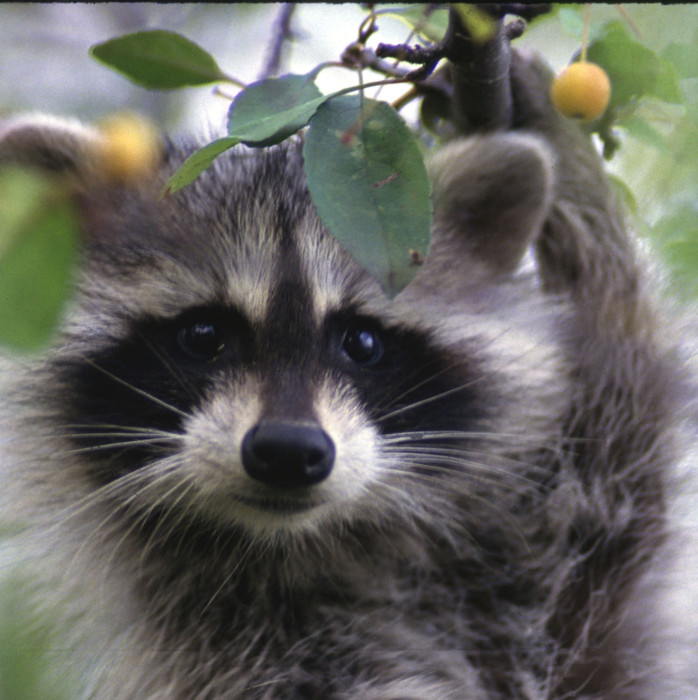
raccoon

Young raccoon in crabapple tree
John Heinz National Wildlife Refuge, PA